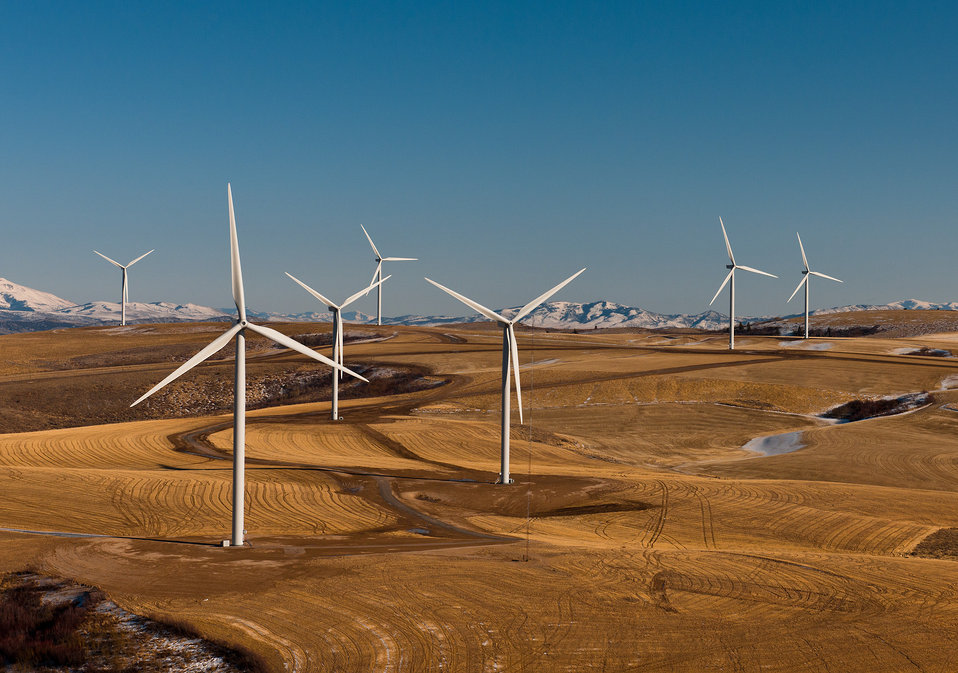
Power County Wind Farm - Power County, Idaho.